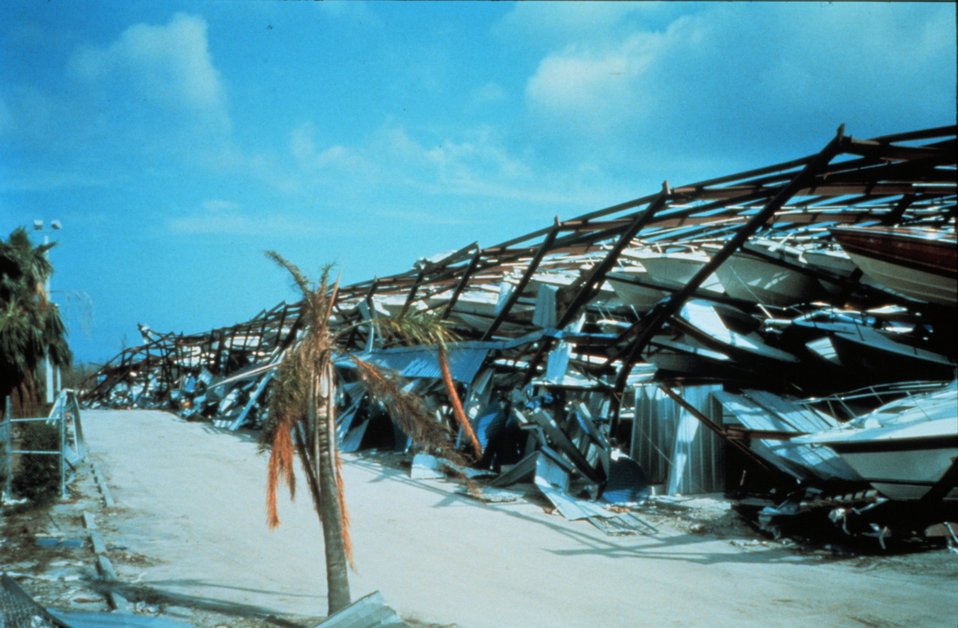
Hurricane Andrew - Boat stack storage facility destroyed by wind This structure was built with steel beams Boat damage total from Andrew approached $500 million